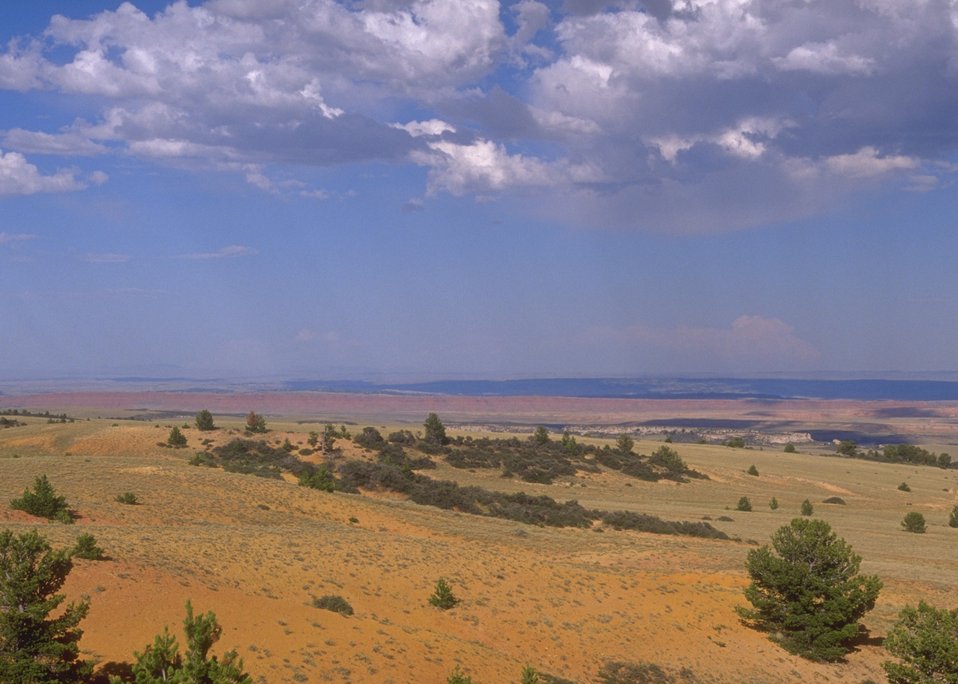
View of Red Wall from a distance, Buffalo Field Office.